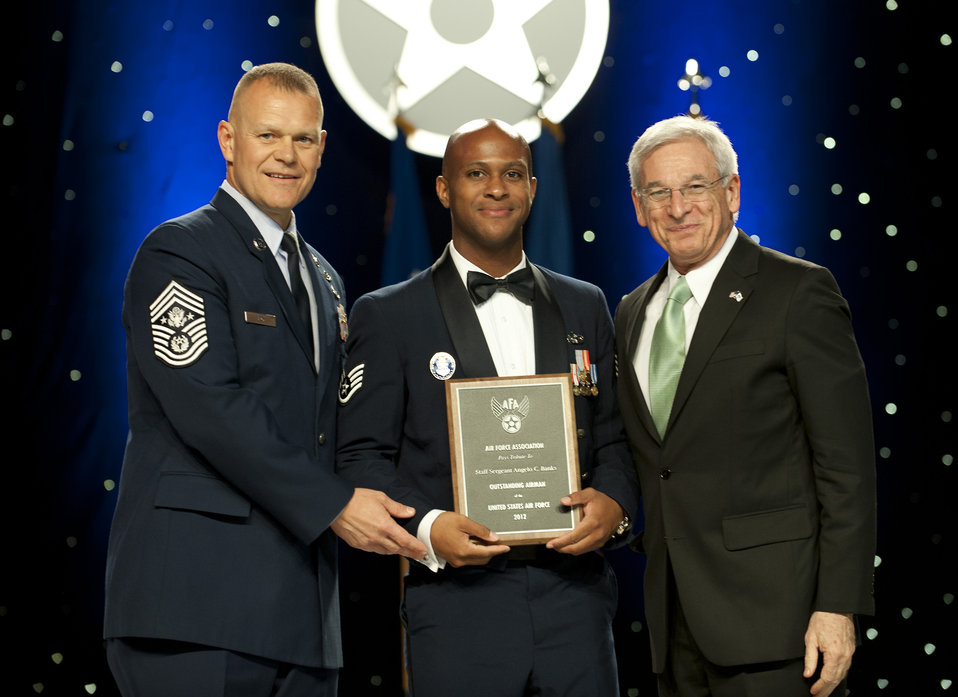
12 Outstanding Airmen of the Year

Chief Master Sgt. of the Air Force James Roy, left, and Sandy Schlitt, right, Air Force Association chairman of the board, present a plaque to Staff Sgt. Angelo Banks during the 12 Outstanding Airmen of the Year reception and awards dinner in Washington, D.C., Sept. 17, 2012. The recipients were recognized for superior leadership, job performance, community involvement and personal achievements. Banks is with the 81st Security Forces Squadron from Keesler Air Force Base, Miss.